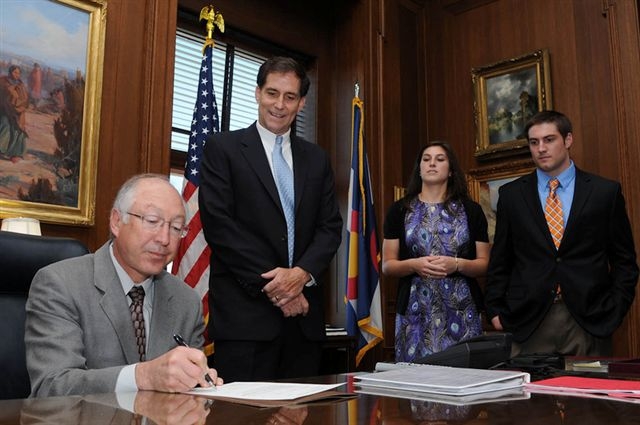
Dan Ashe Confirmed as 16th Director of U.S. Fish and Wildlife Service

Secretary Salazar signs official papers to making Dan Ashe the new director of the US Fish & Wildlife Service.